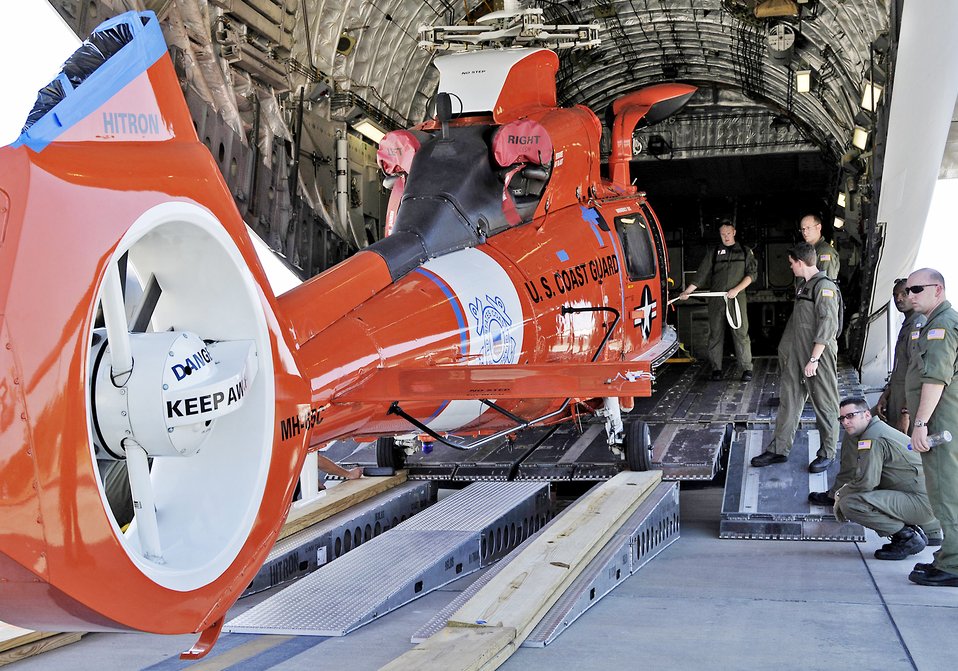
Moving the Coast Guard

Airmen load a Coast Guard helicopter onto a C-17 Globemaster III April 7, 2009, at Charleston Air Force Base, S.C. Two helicopters were delivered to Central America for missions there. The C-17 aircrew is from the Air Force Reserve's 315th Airlift Wing from Charleston AFB.